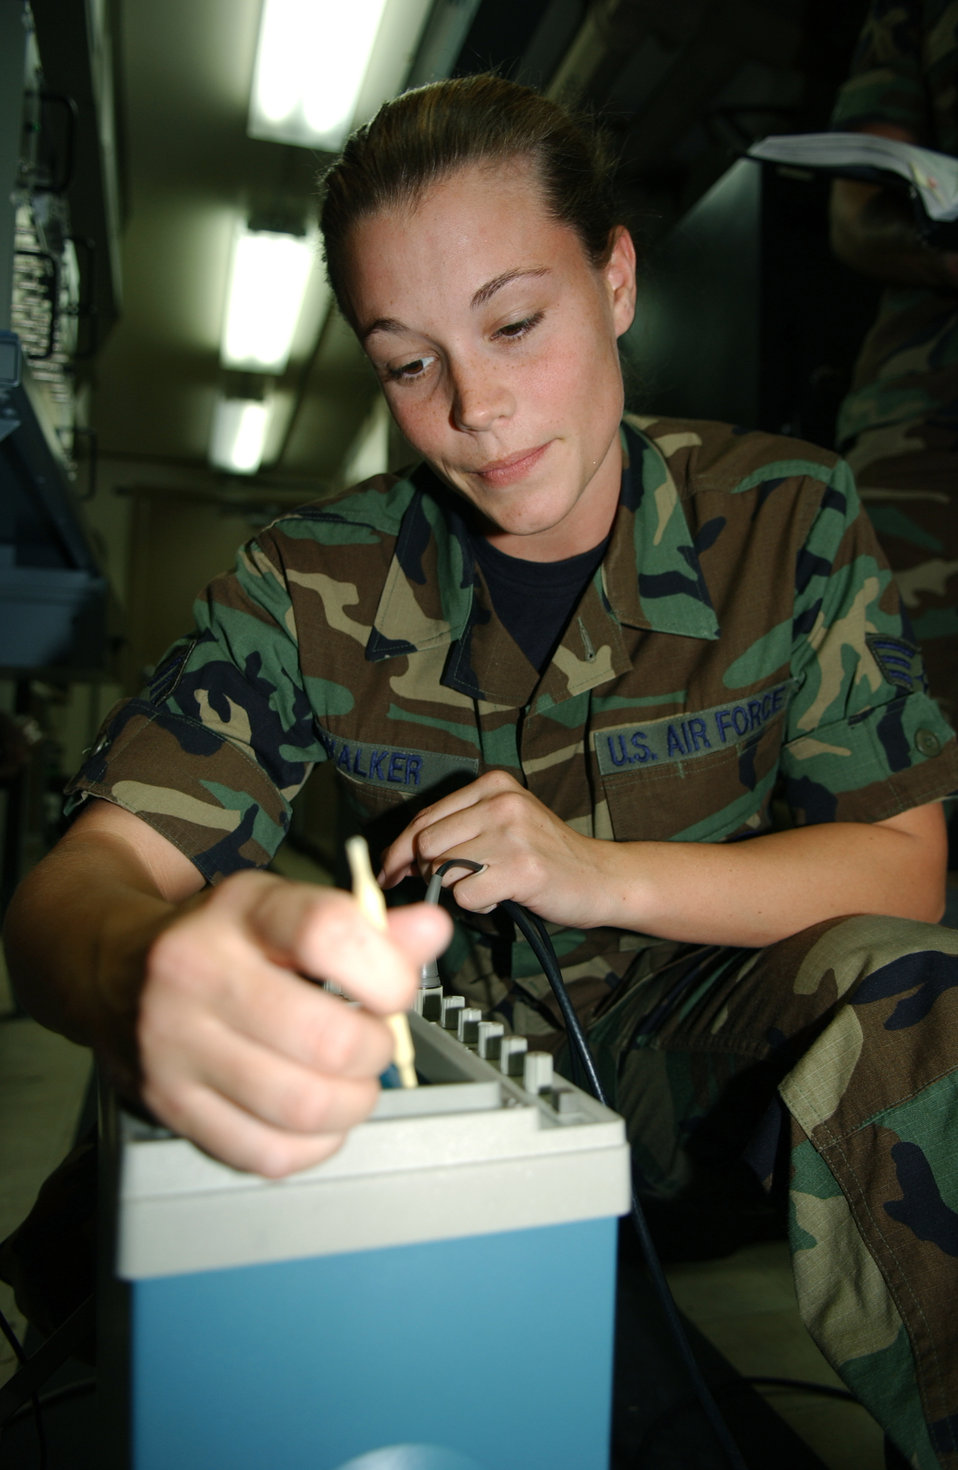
Taking measurements

SPANGDAHLEM AIR BASE, Germany -- Senior Airman Camelia Walker uses an oscilloscope to measure video frequencies using a time versus voltage format here Sept. 2. Airman Walker is a radar maintenance technician from the 52nd Communications Squadron.